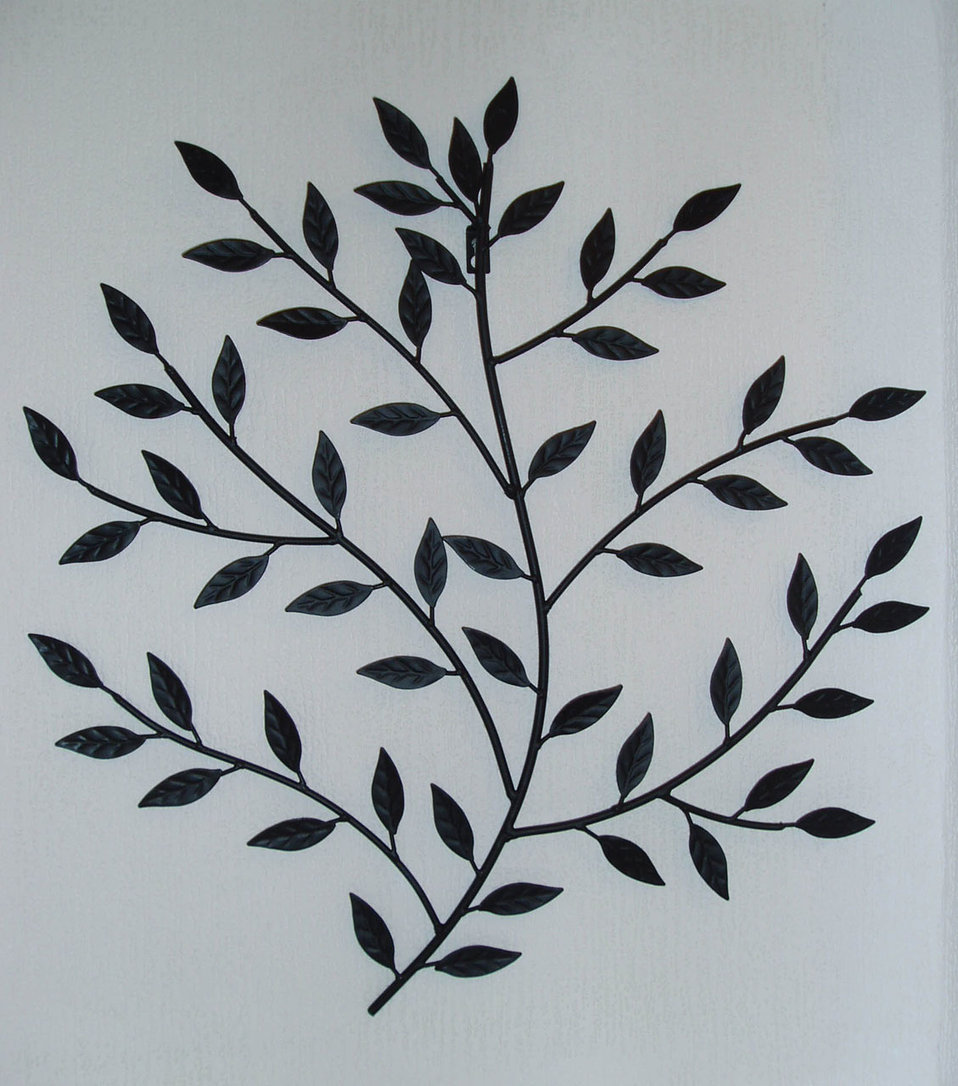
Wall art

Metal branch wall art.